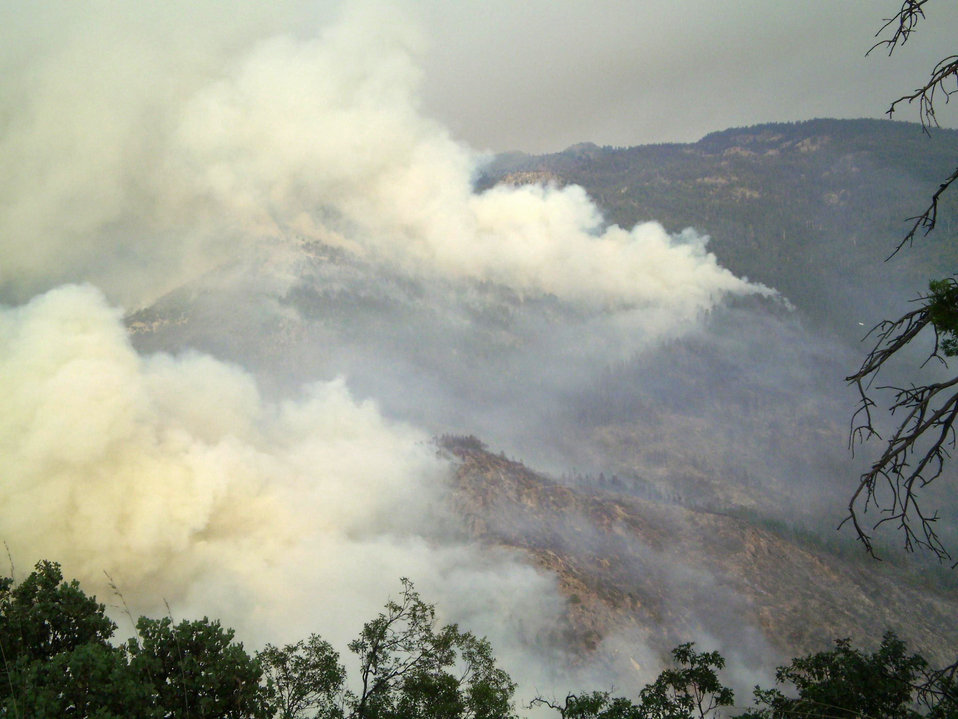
The Aspen Fire in the Sierra National Forest near Big Creek, CA began on Jul. 22, 2013 by lightning and has consumed approximately 1, 400 acres and is approximately 20% contained.